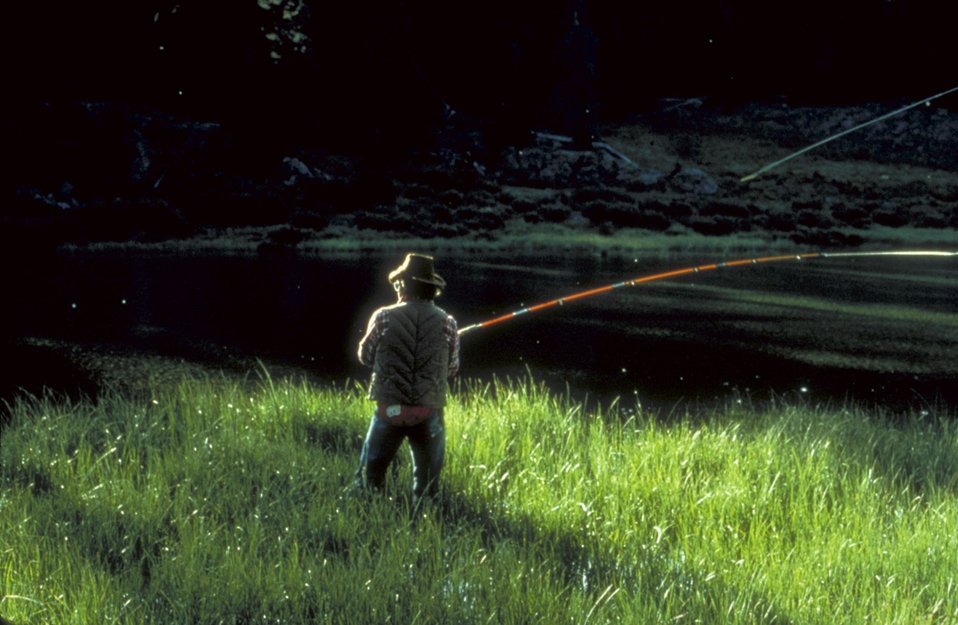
Back Country